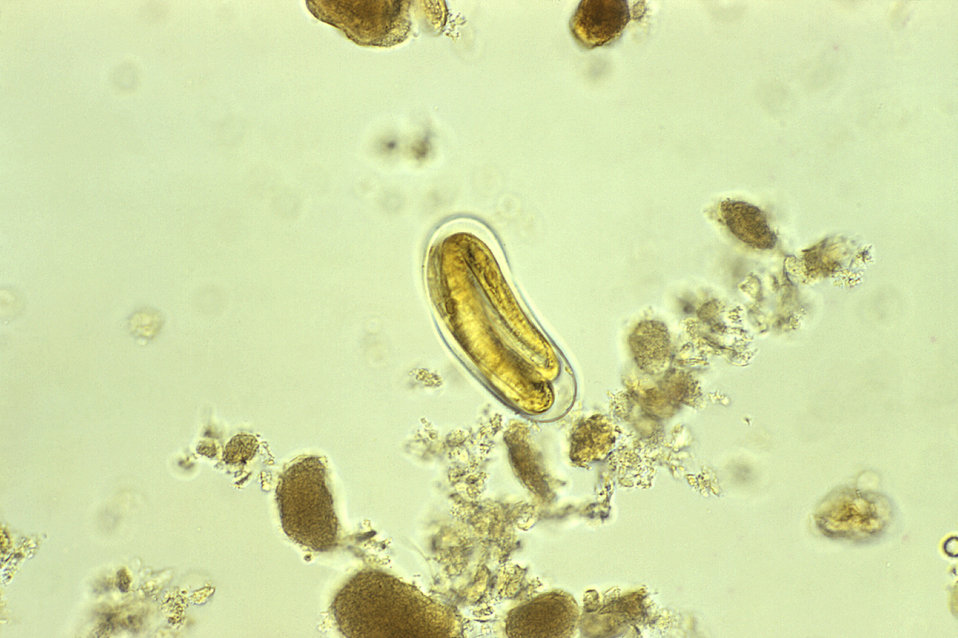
Magnified 240X, this photomicrograph revealed the presence of a Heterodera sp. nematode egg.